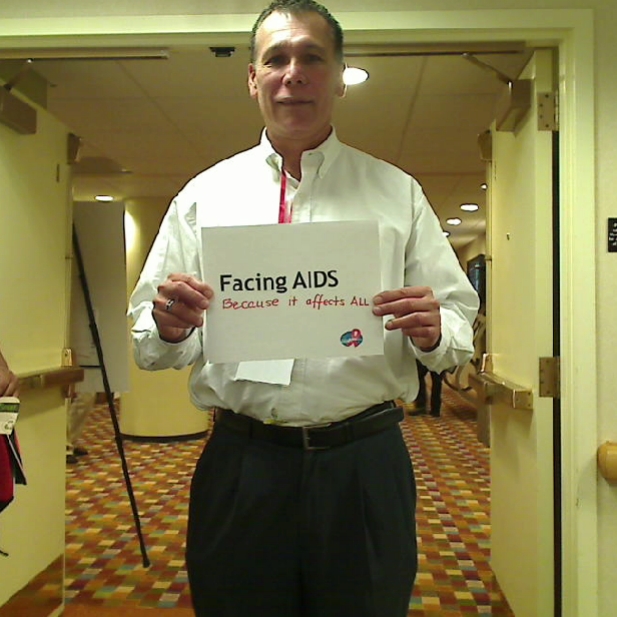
Facing AIDS because it affects ALL.